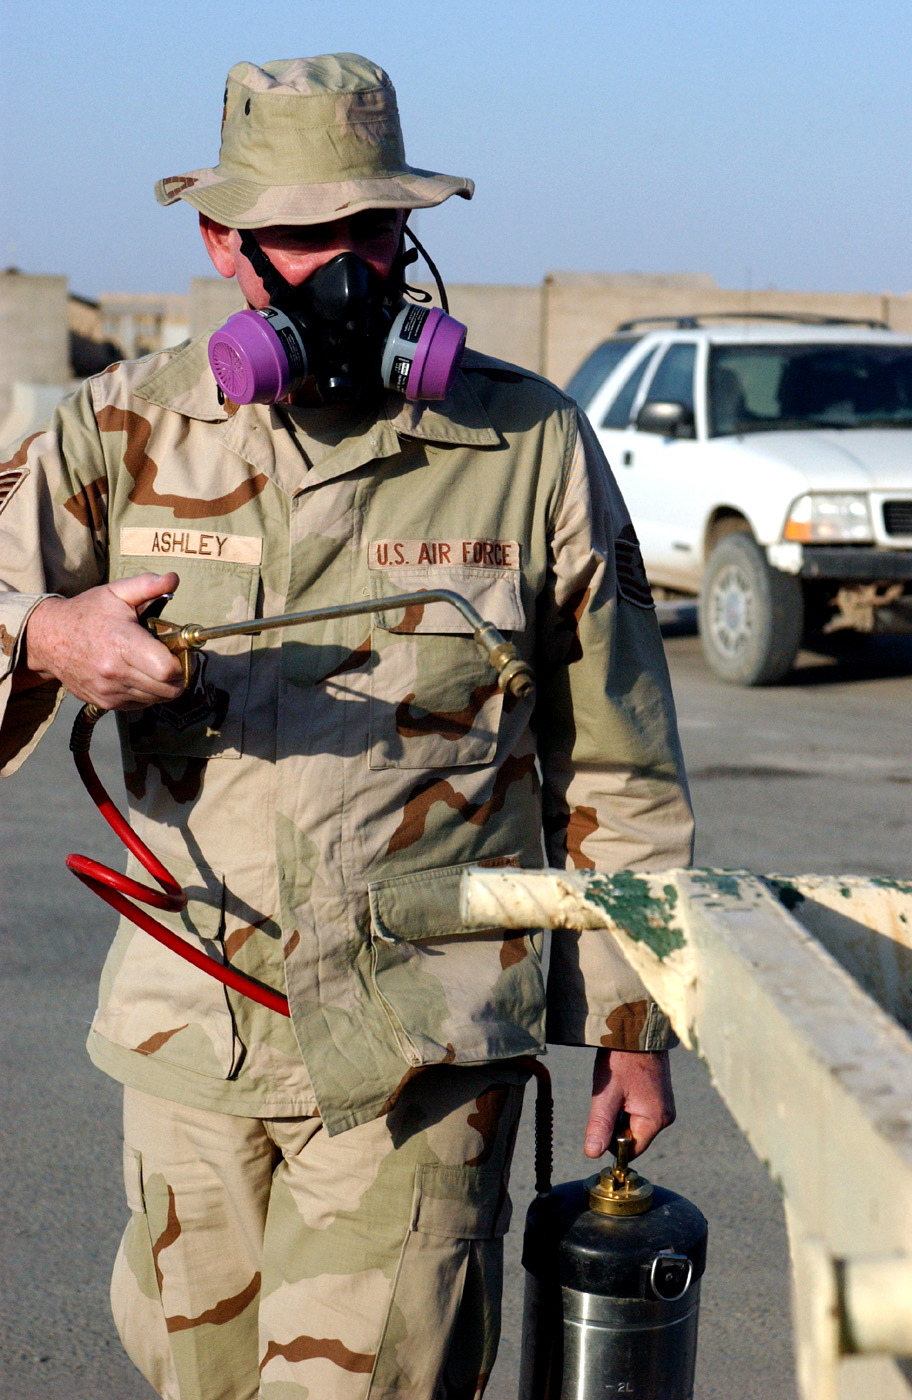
Unit keeps pesty visitors at bay

Tech. Sgt. David Ashley sprays insecticide around a dumpster to keep flies down. He is assigned to the 407th Expeditionary Civil Engineer Squadron entomology flight at Ali Base, Iraq.